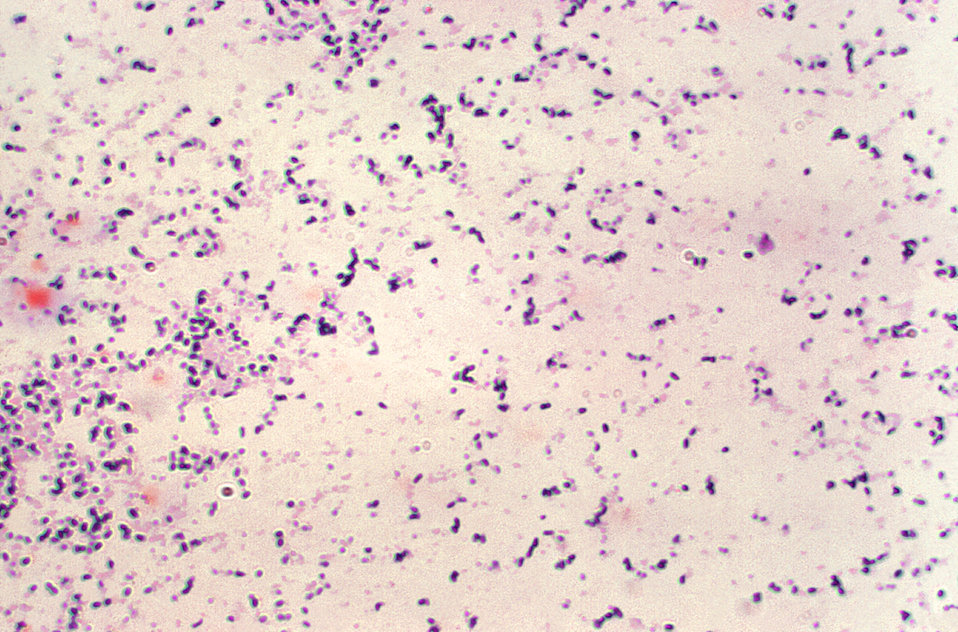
Magnified 1000X, this micrograph depicts numerous Peptostreptococcus sp. bacteria that were grown in Schaedler's broth, and stained using the Gram-stain technique.